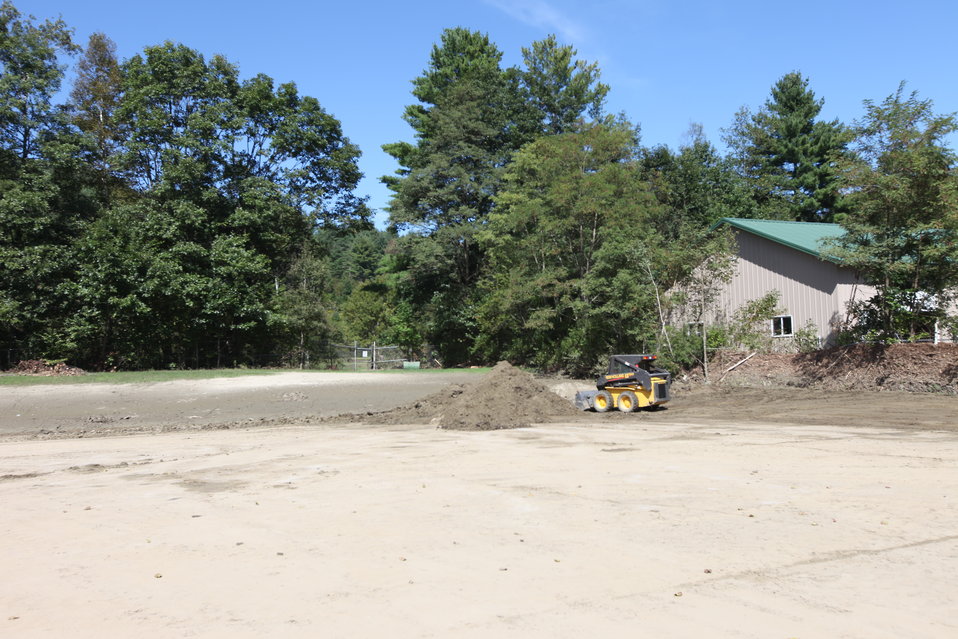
Storm damage relief at White River NFH

Heavy equipment operators came from other USFWS stations to help clean up.